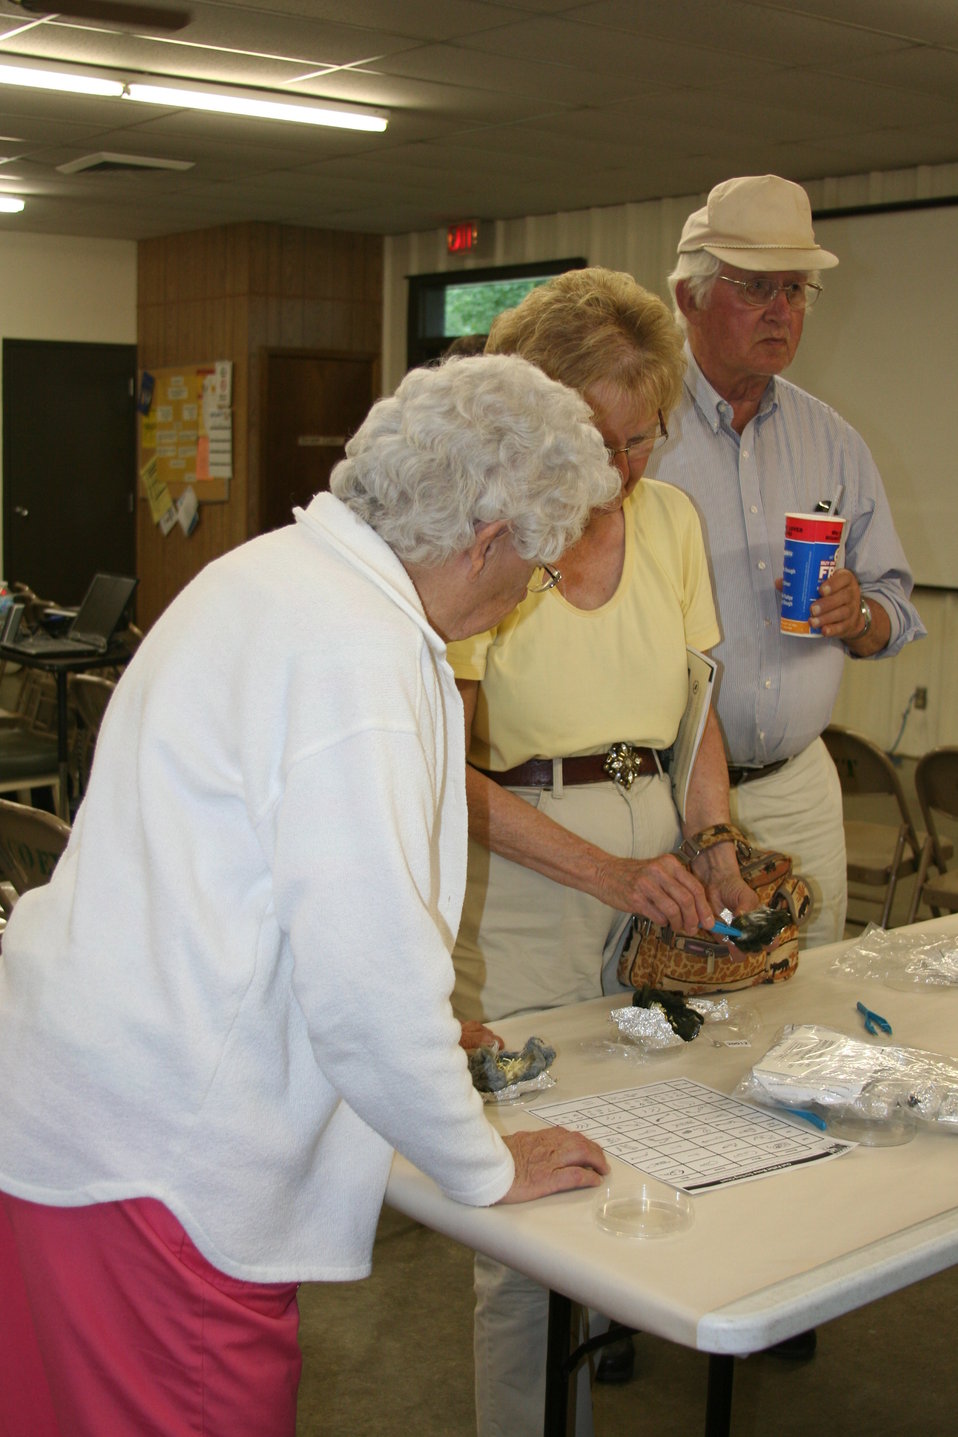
Creatures of the Night 2011